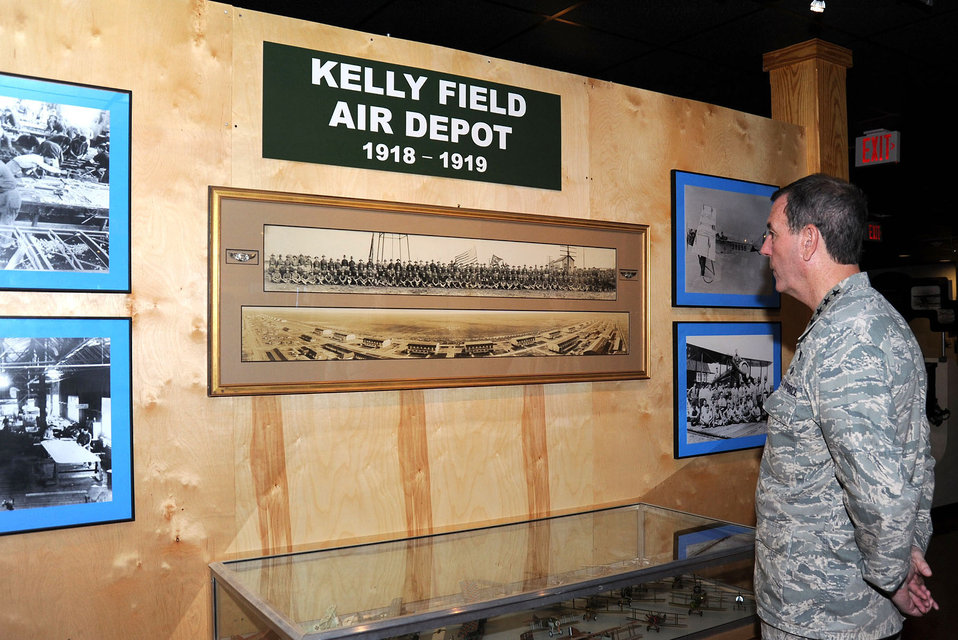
Renovated heritage museum reopens

Gen. Stephen R. Lorenz tours the USAF Airman Heritage Museum during the museum's grand opening Aug. 12, 2010, at Lackland Air Force Base, Texas. The museum features interactive technology and 31 exhibits. General Lorenz is the Air Education and Training Command commander.